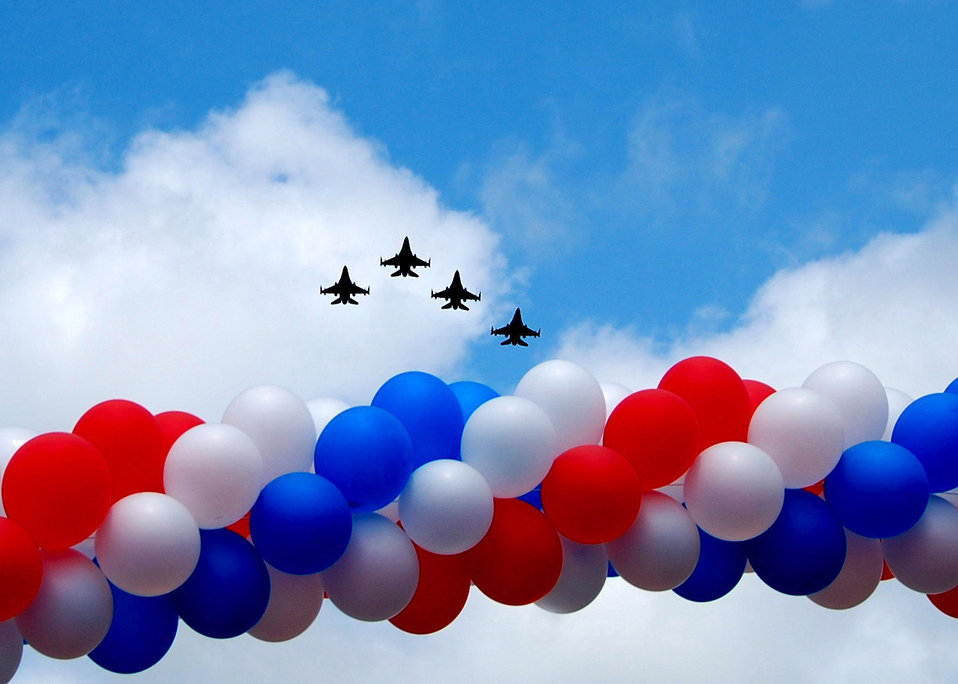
Red, white and blue celebration

Four F-16 Fighting Falcons fly over Longmont, Colo., for a 4th of July celebration there. The aircraft are assigned to the Colorado Air National Guard's 140th Wing located at Buckley Air Force Base, Colo.